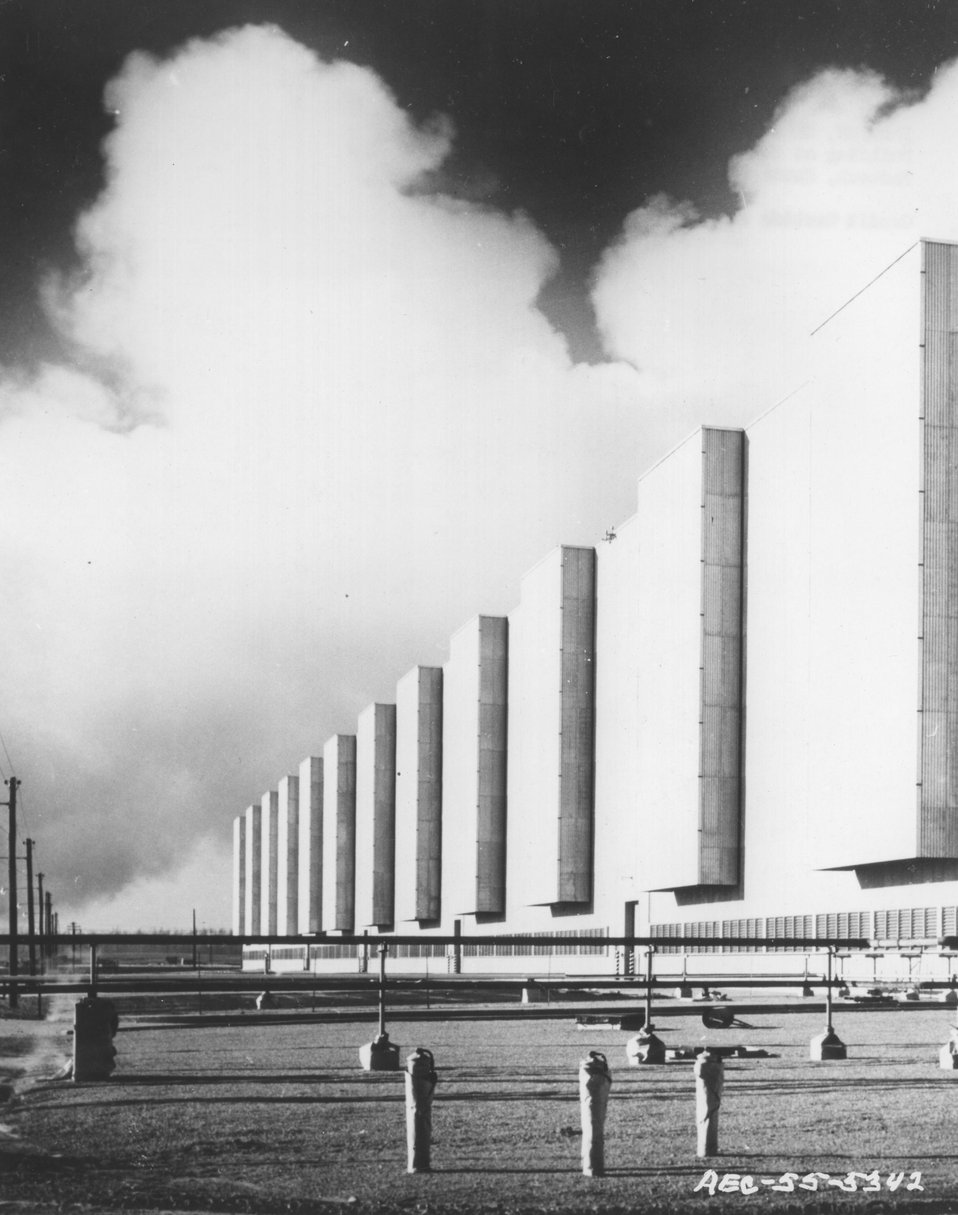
Part of a Production Building at the gaseous diffusion plant, Pcaducah, Kentucky. c. 1955